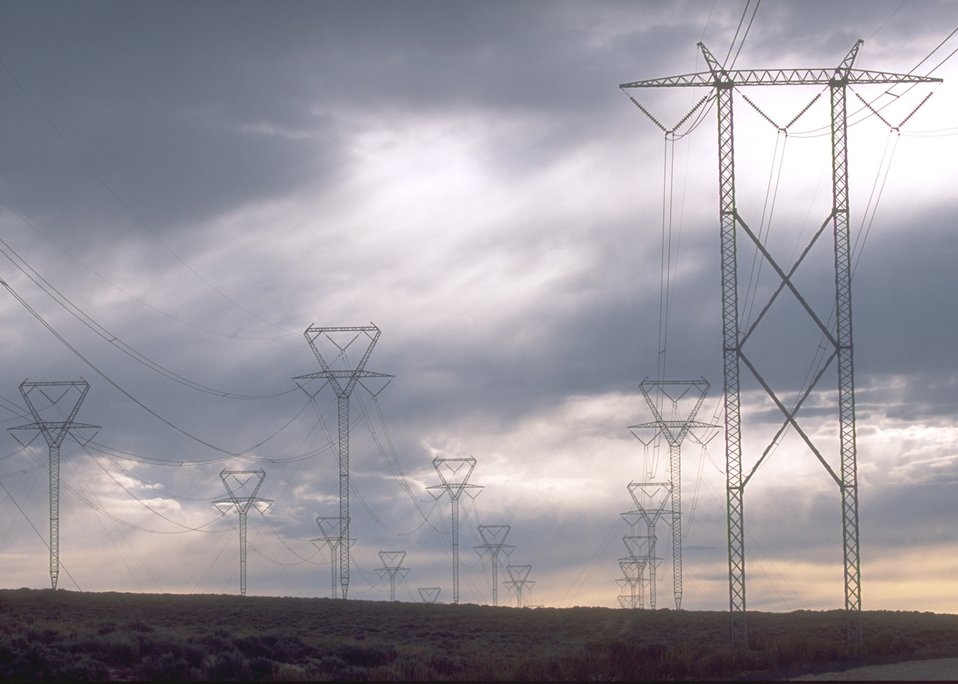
ROW's - Electric power lines near Rock Springs, WY.